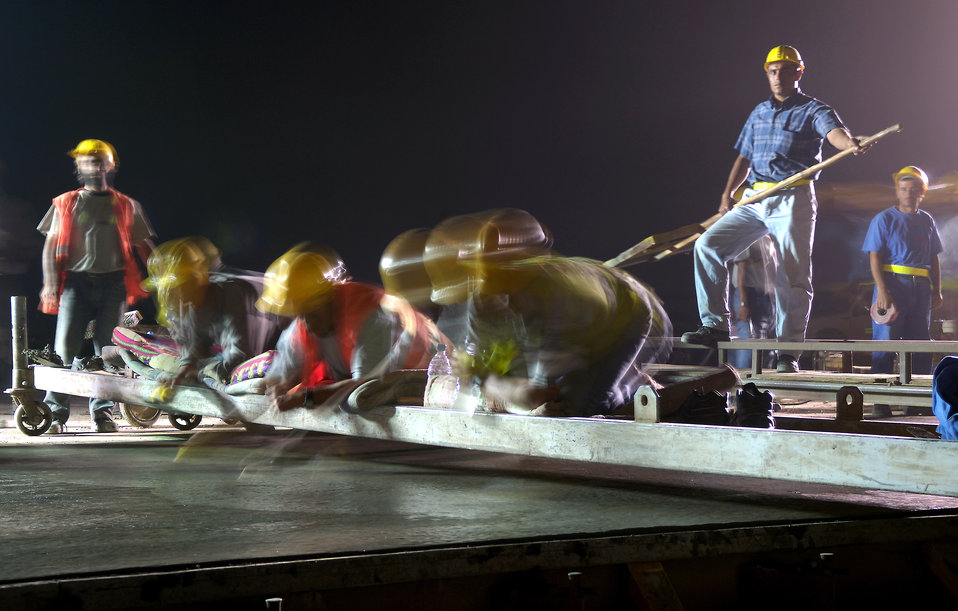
Runway repair reduces FOD at Balad

Contractors working with the Air Force and the U.S. Army Corps of Engineers replace a section of runway at Balad Air Base, Iraq, on Thursday, May 18, 2006. The extensive damage was causing the runway to break apart and create foreign object debris. More than 1,000 meters of the runway will be replaced. Major Jefson is a project manager for the U.S. Central Command Air Forces' construction management office.